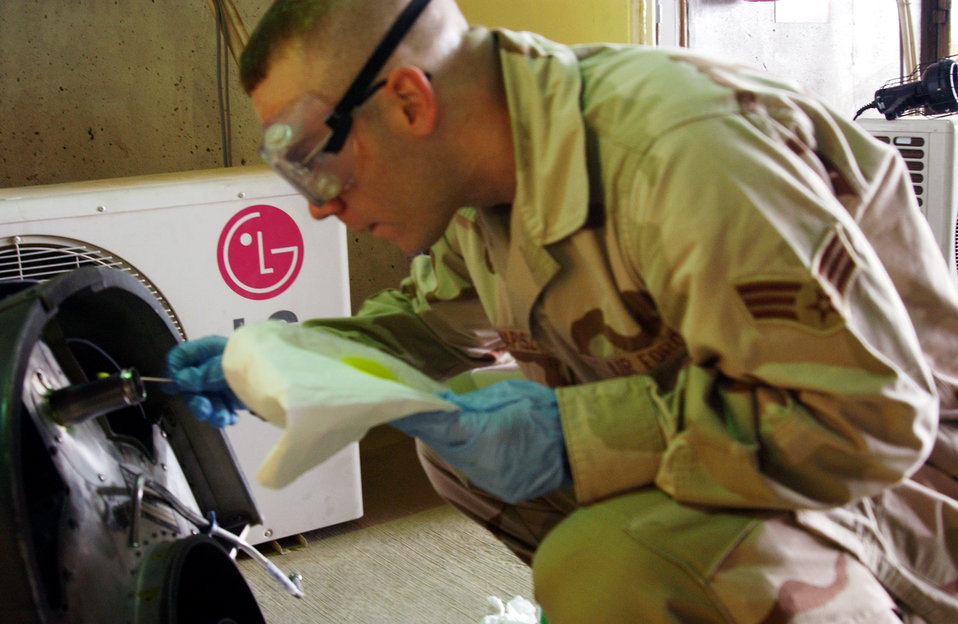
Maintainers seek hidden flaws, help save lives

Senior Airman Brien Kwapisz checks for cracks in an aircraft part July 23 in the non-destructive inspection shop at Balad Air Base, Iraq. Airman Kwapisz is an NDI tester with the 332nd Expeditionary Maintenance Squadron and he is deployed from Misawa Air Base, Japan.